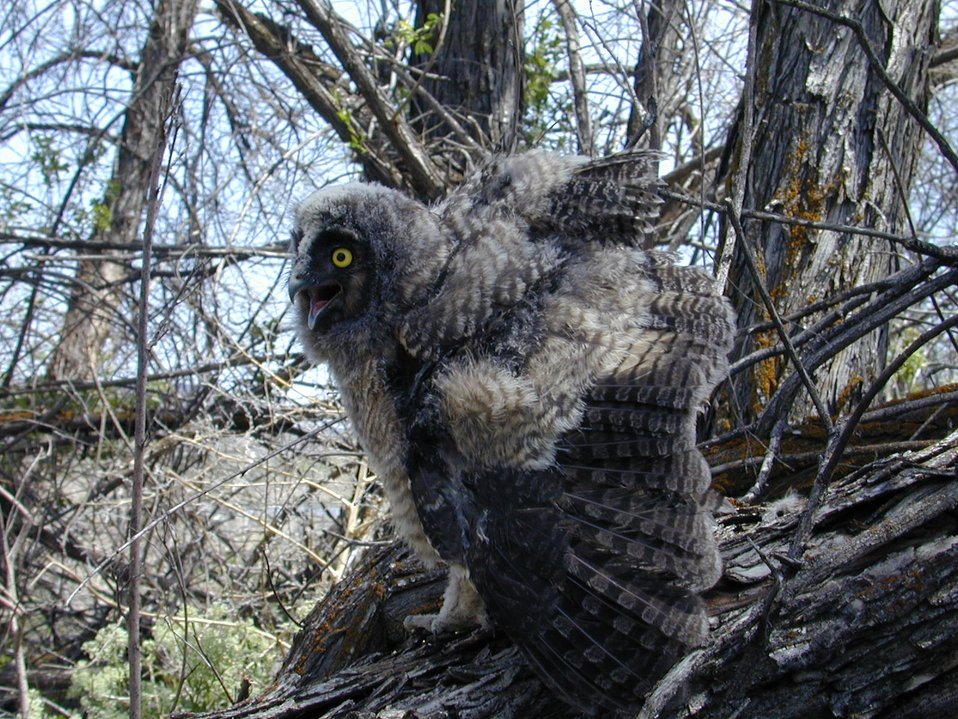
Environmental Education Fire Workshop Timberline High School Fall 2000